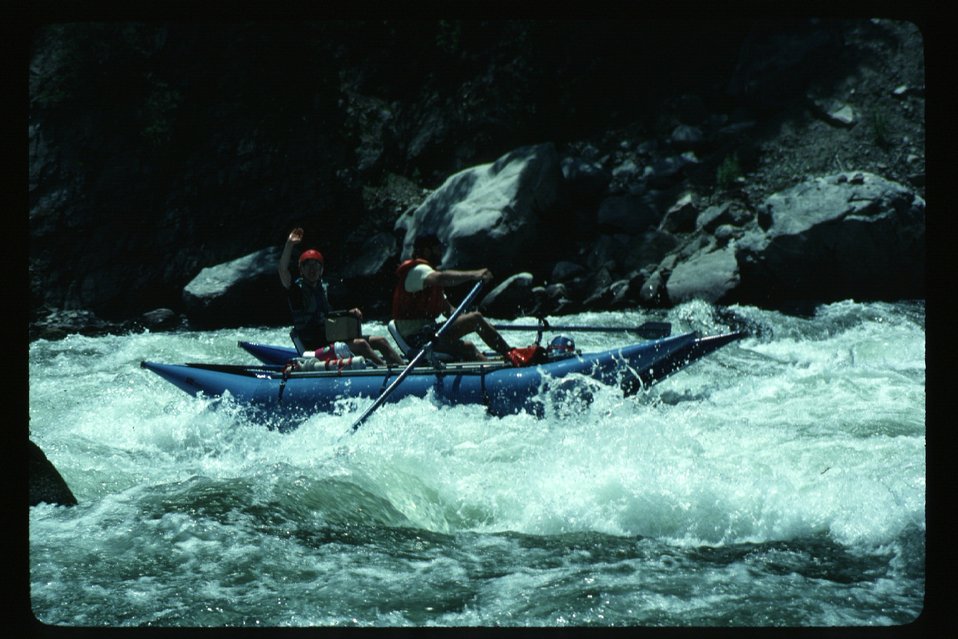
Kayaker in white water Kayaking Four Rivers Field Office LSRD Lower Snake River District